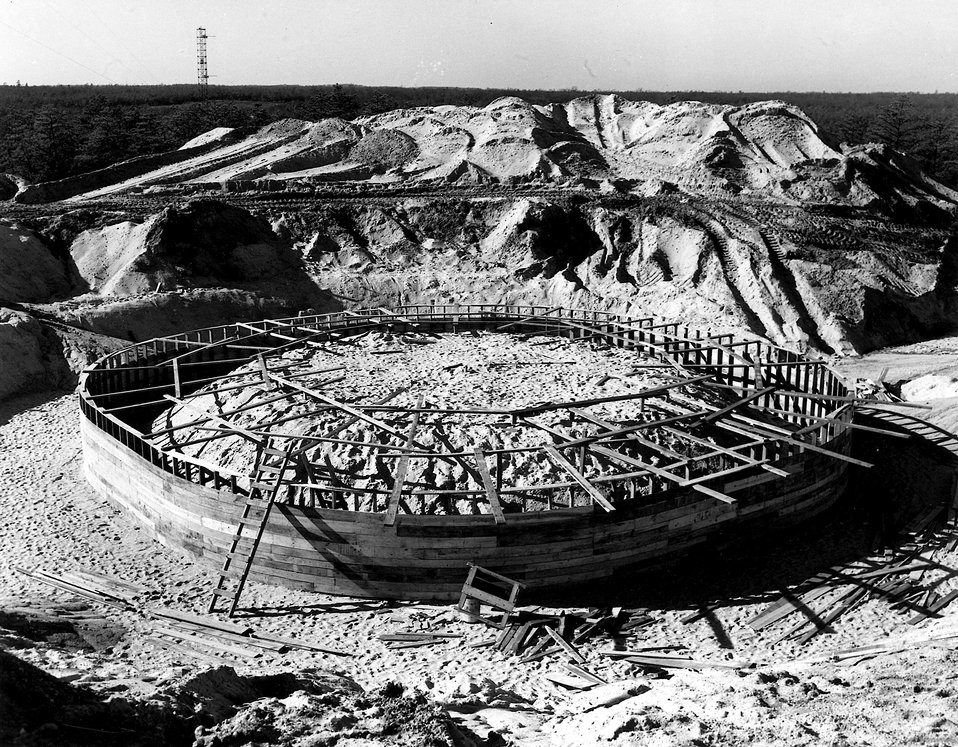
First form for the concrete pad upon which Cosomotron was assembled.